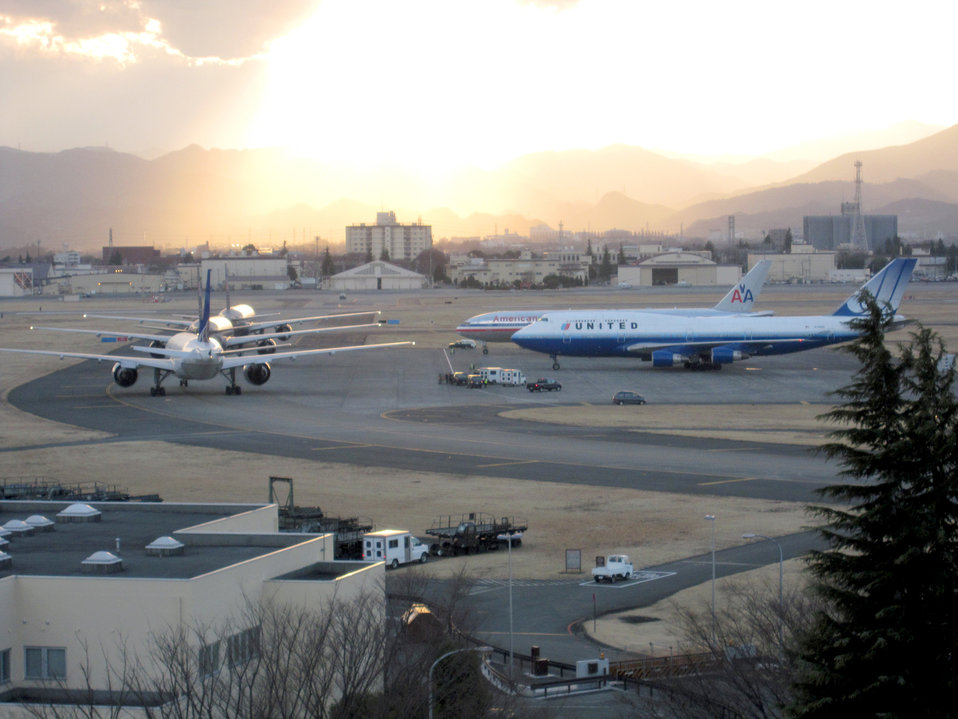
Several commercial aircraft have diverted to Yokota Air Base from Narita International Airport, after it closed in response to an earthquake that hit mainland Japan at 2:50 p.m. today.